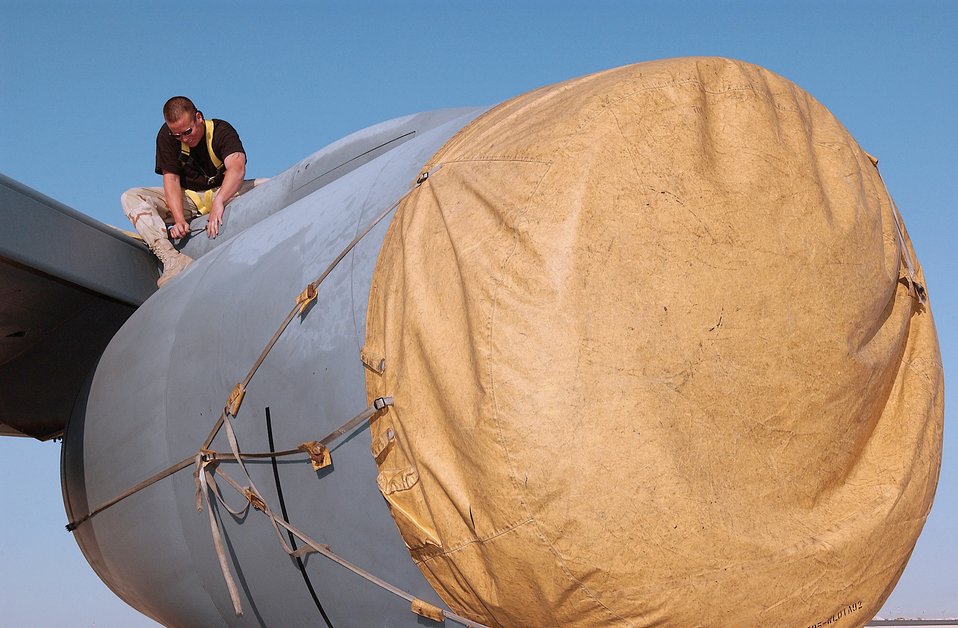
Maintainers keep Stratotankers airborne

SOUTHWEST ASIA -- Senior Airman Mark Lewis removes a panel from an engine mounting strut on a KC-135 Stratotanker here. He is a KC-135 maintainer assigned to the 340th Aircraft Maintenance Unit and deployed from Grand Forks Air Force Base, N.D. The 340th AMU is part of the 379th Expeditionary Aircraft Maintenance Squadron.